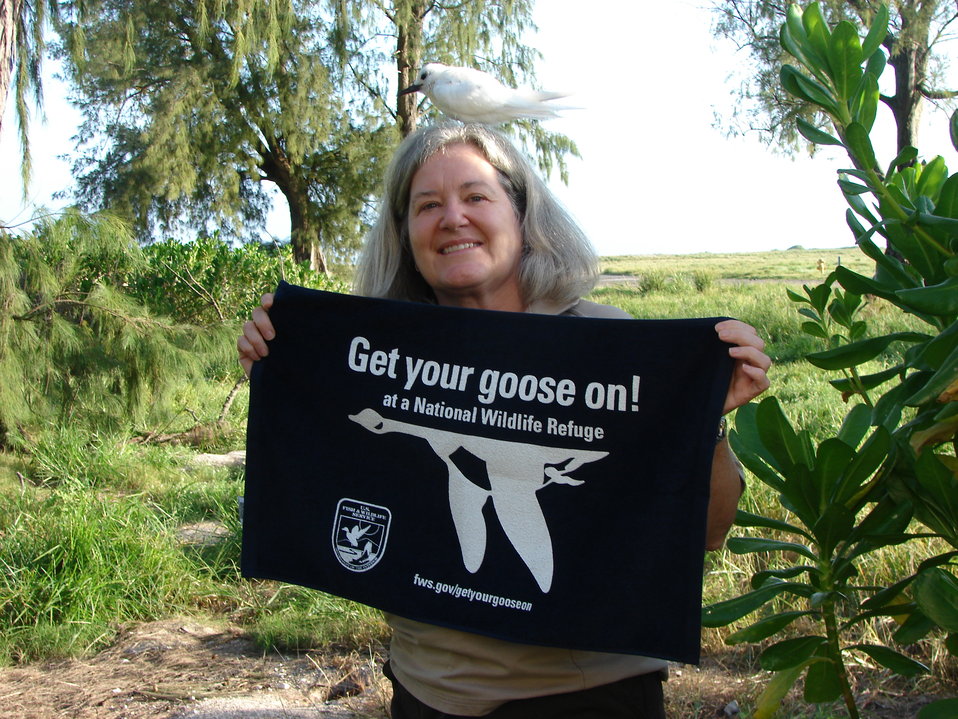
Get Your Goose On! - Pacific Atoll Style!

Midway Atoll National Wildlife Refuge staff take a break from feeding abandoned fledging white terns to Get Their Goose On!